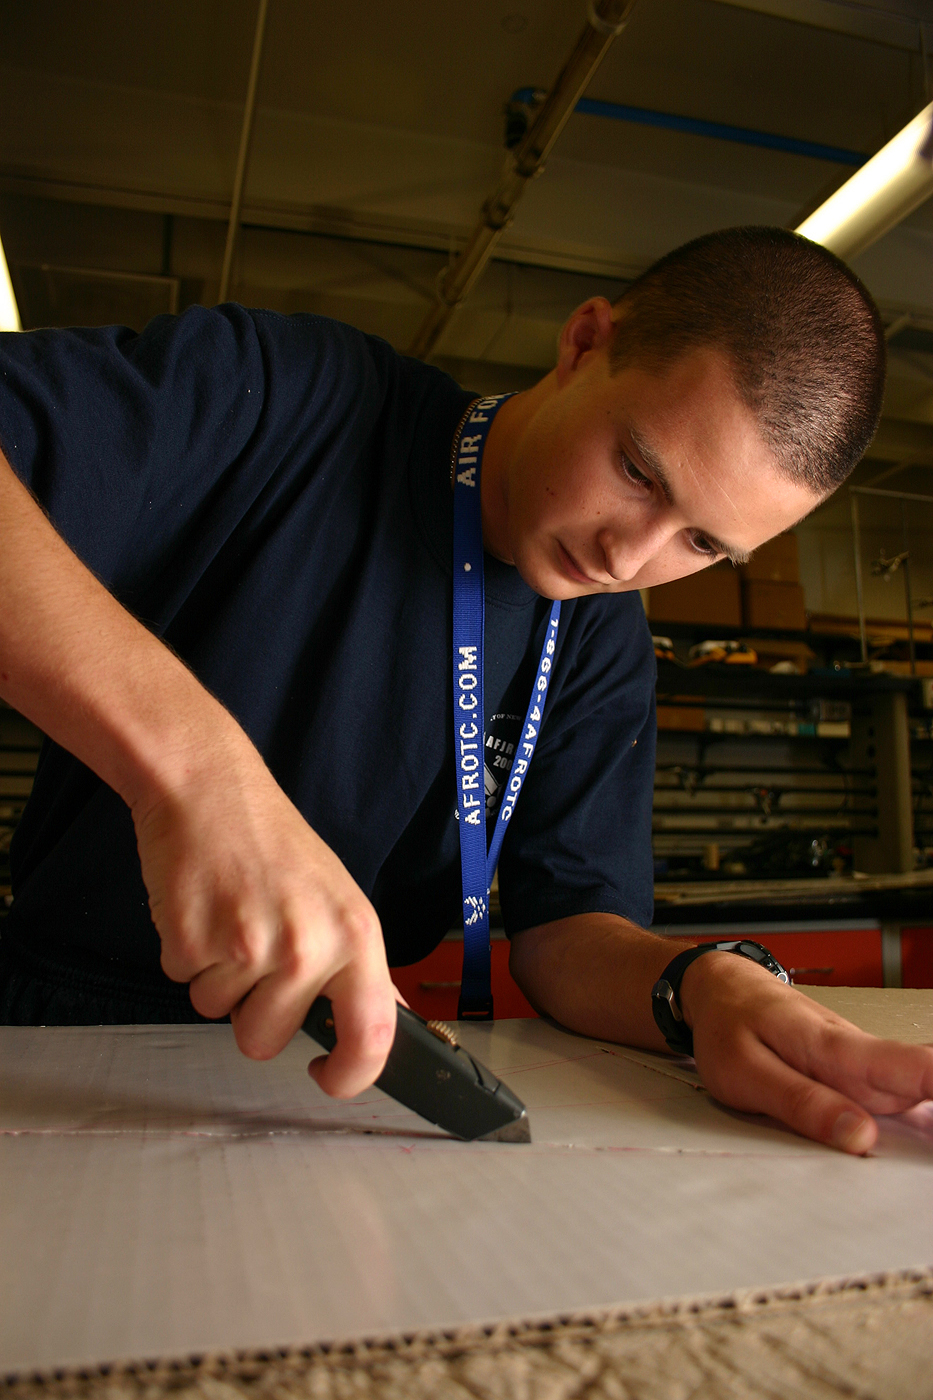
Top Junior ROTC cadets explore AF opportunities

Air Force Junior ROTC Cadet Thomas Murphy from California carves out the frame of his team's rocket car July 29 during the 2008 Air Force Junior ROTC Aerospace and Technology Honor Camp rocket car contest at Albuquerque, N.M. More than 450 cadets from Junior ROTC units worldwide participated in a total of eight camps with 54 students each - half at Albuquerque and half at Norman, Okla., and Tinker AFB.